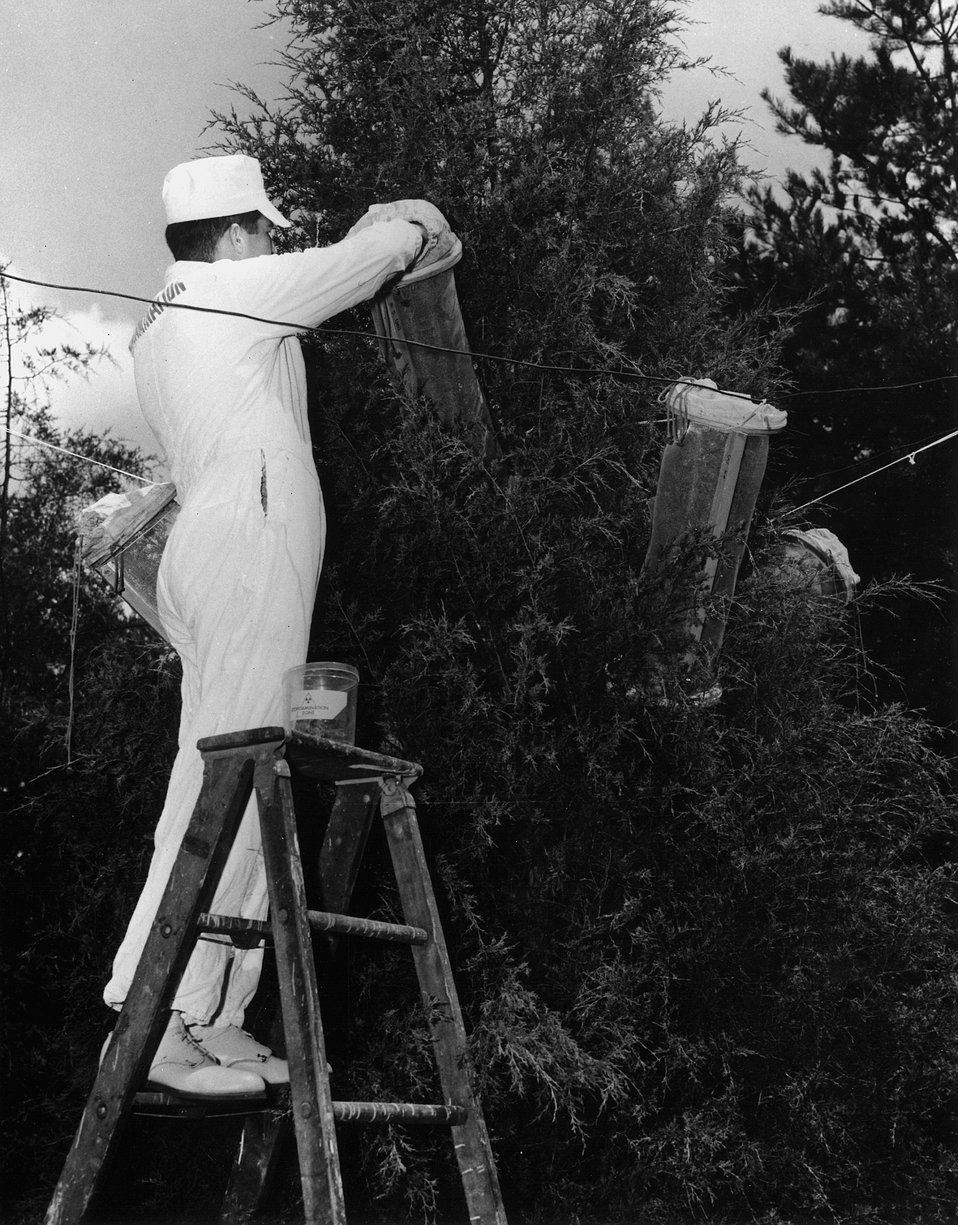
Oak Ridge National Laboratory Ecologist D.E. Reichle inspects cages placed around bag worm infestations on a red cedar tree which has been injected with radioactive cesium-134. c. 1967